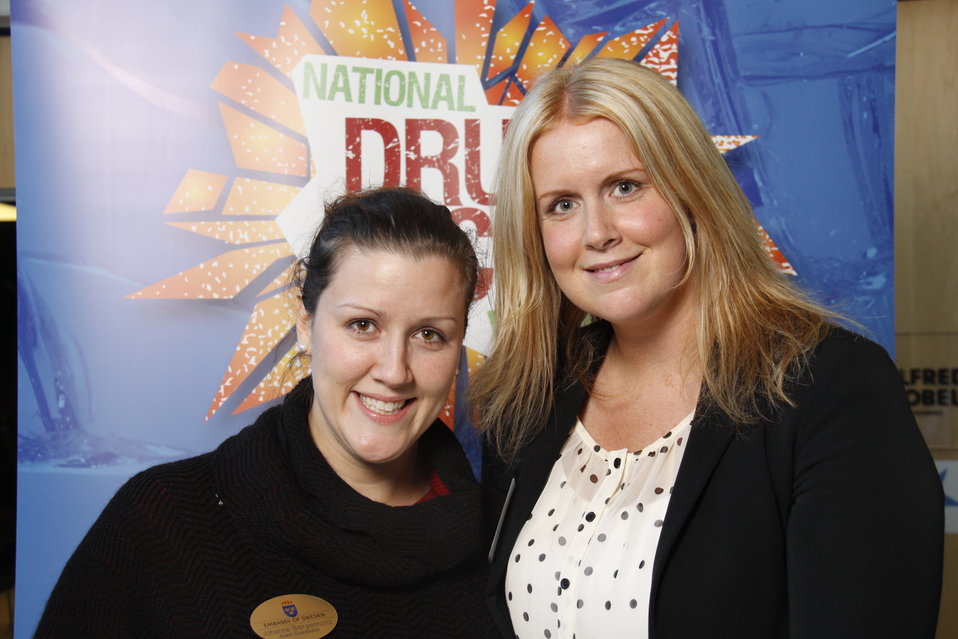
NDFW Mentor Event